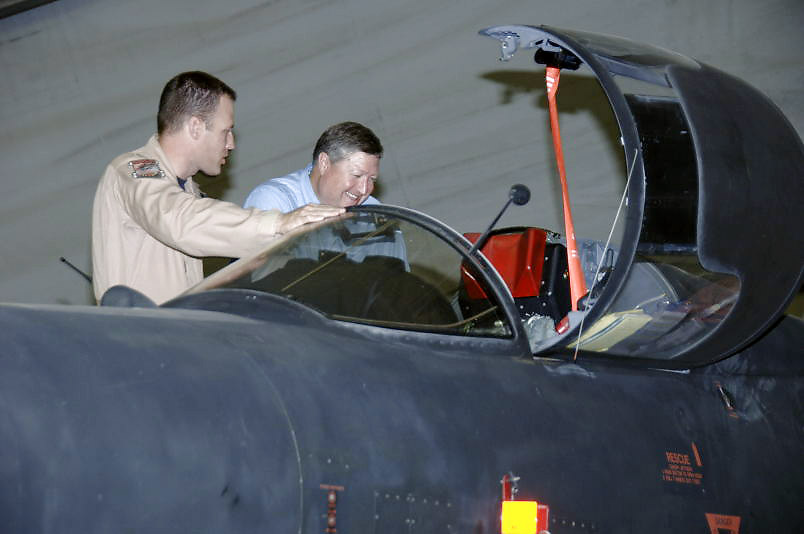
SECAF gains insight into diverse missions at deployed wing

Lt. Col. Vincent Catich shows Secretary of the Air Force Michael B. Donley the cockpit of a U-2 Dragonlady during the secretary's visit to the 380th Air Expeditionary Wing at an air base in Southwest Asia Oct. 12. The secretary visited the 380th Air Expeditionary Wing to gain a better understanding of the infrastructure and capabilities of one the smallest but most diverse bases in the Air Forces Central area of responsibility.